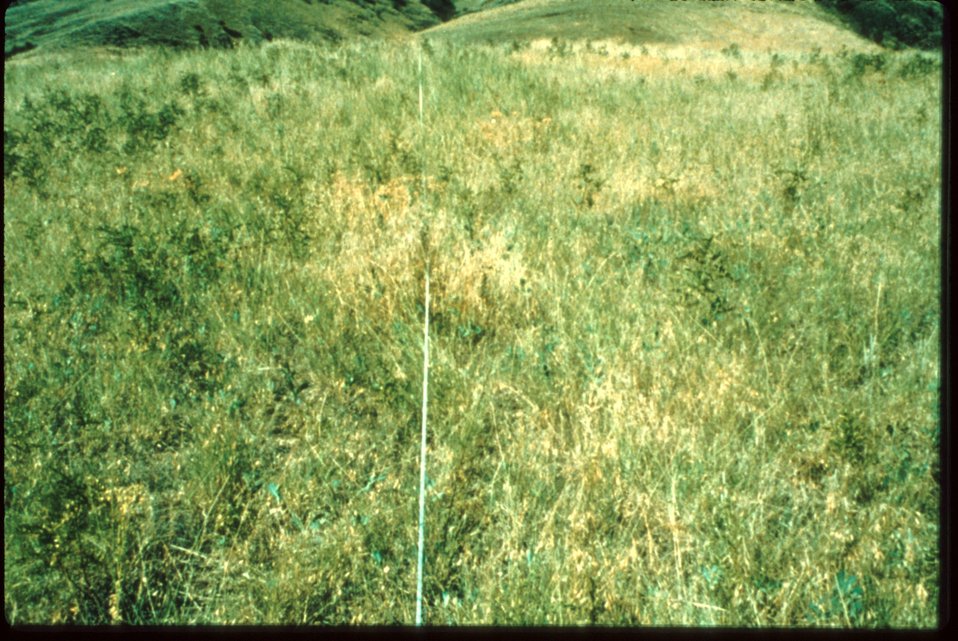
Cottonwood BLM Lands before Yellow Starthistle takes over Idaho vegetation Plants in BLM